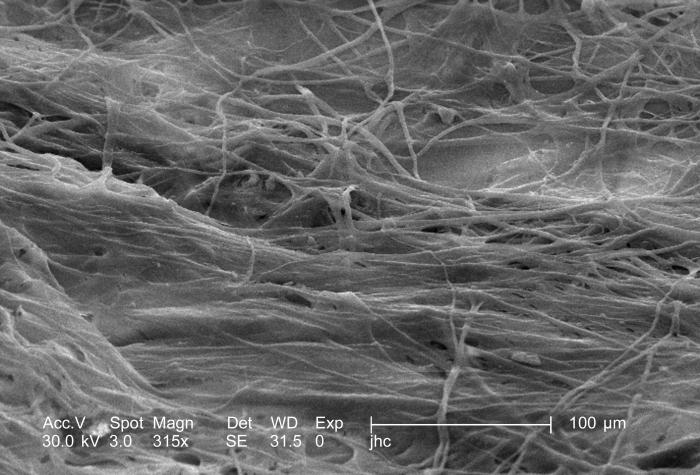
At a moderately high magnification of 315x this scanning electron micrograph (SEM) depicted some of the ultrastructural details made visible of the surface of an unidentified wasps' nest found on the ground in the Decatur, Georgia suburbs. Note that the nest material takes on the appearance of woven fibers embedded in a glue-like matrix, very similar to the way in which rebar, i.e., iron textured rods, is embedding in concrete to reinforce the building material.